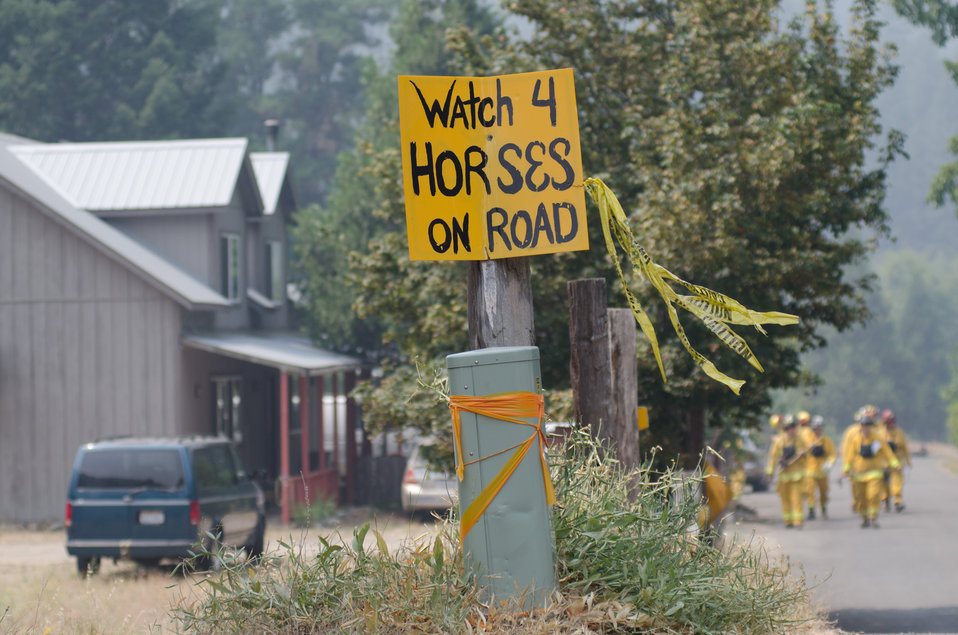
Near the Sawyer's Bar Town Hall, left, Fire fighters specializing both structural and wildland firefighting from Tahoe National Forest, Mt. Shasta-Trinity National Forest, South Yreka Fire Department, Dunsmuir-Castella Fire Department and others, have been called to the Salmon River Complex Fire, and conduct their structure-by-structure assessment of the urban intermix environment, at Sawyers Bar, CA in the Klamath National Forest, Tuesday, Aug. 6, 2013. The firefighters advise resident about fire prevention measures they are doing on their own as well as other measures they could take to prepare for fire. Actions such as moving away firewood, cutting and clearing plants next to their structures, and using garden hoses to soak structures and grounds all help in the event the main fire comes into their town.
There are two types structure environments in the realm of wildland firefighting.
This urban intermix structural protection environment is generally the more challenging, where structures have been built within a wildland area, isolated to some degree from other structures, but with no separation from wildland fuels (trees, brush and grass). This requires each structure to be assessed on a case-by-case basis. Fire protection measures will be tailored to each situation; defending these structures require a more complex solution, more firefighters, equipment and resources per structure.